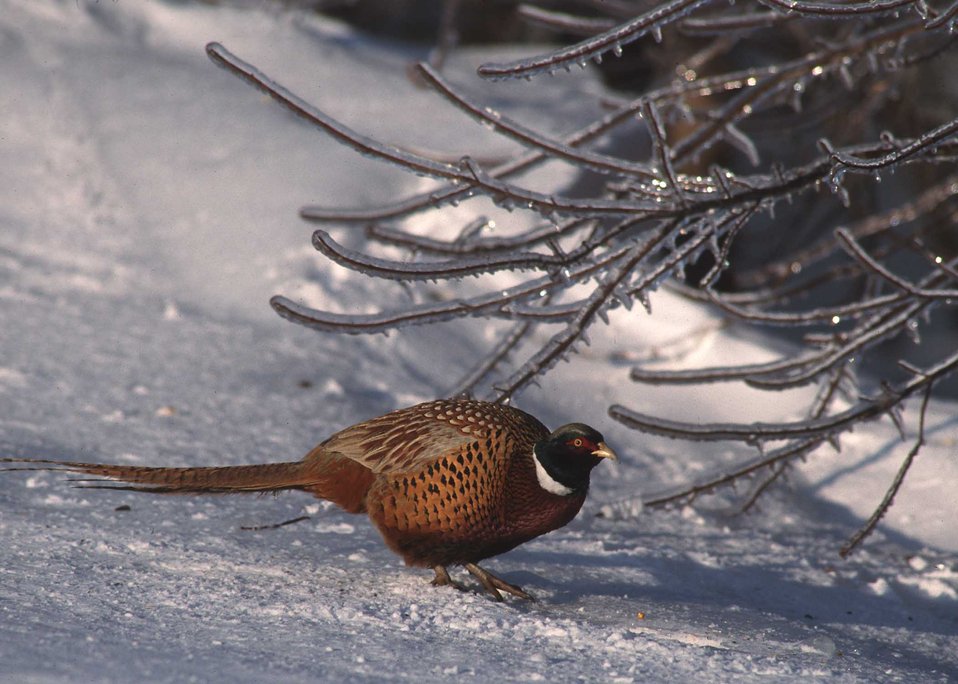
Pheasants and other wildlife species need both food and cover in harsh Iowa winters. It is provided by landowners with both annual and perennial plantings.